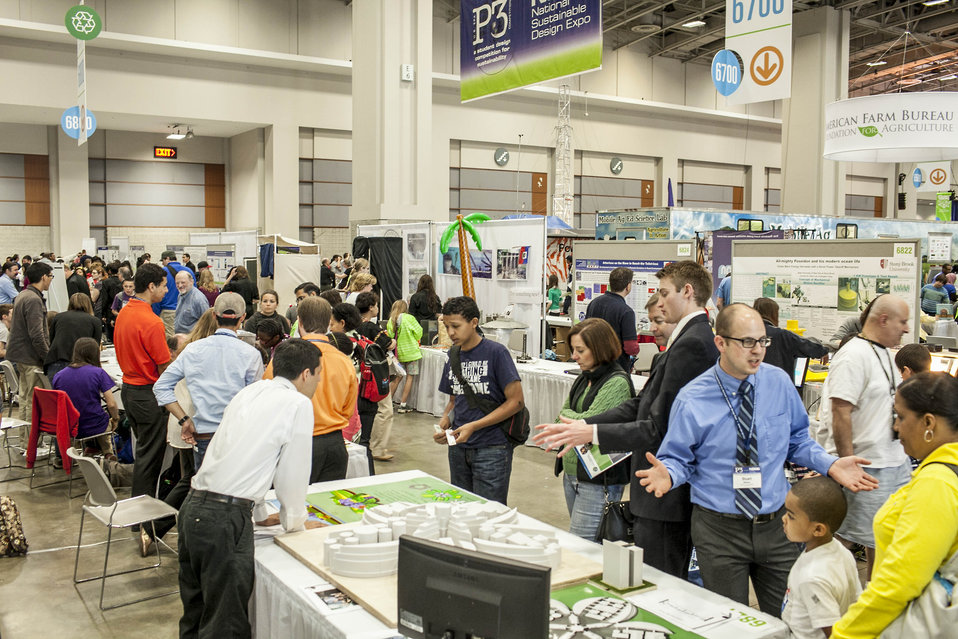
2014 P3 Competition

Visitors to this year’s EPA P3 competition hear from the college teams about their solutions to environmental challenges, April 26-27, 2014.